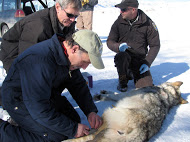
Gray wolf

Scientific name: Canis lupus
Status: Endangered Non-essential and Delisted
Photo credit: Lori Iverson USFWS
Biologist drawing blood sample